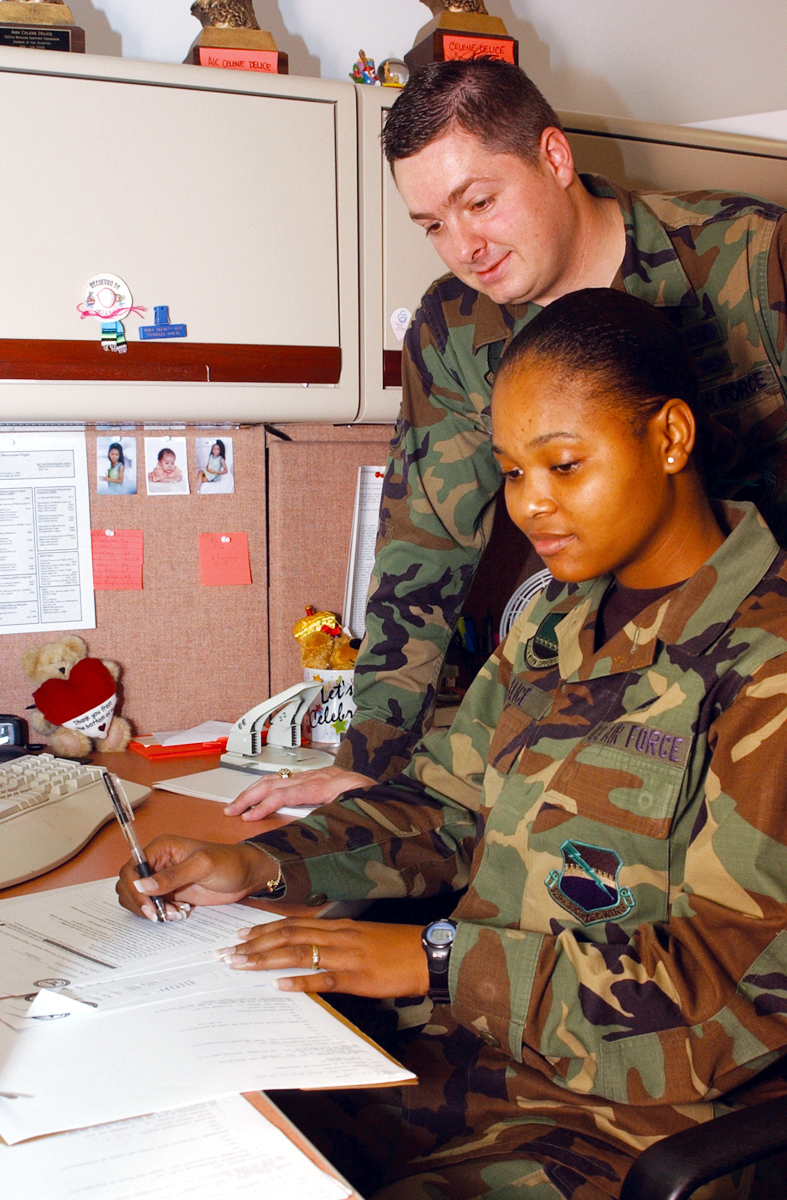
Tyndall Airman becomes U.S. citizen

TYNDALL AIR FORCE BASE, Fla. -- Airman 1st Class Celene Delice and her supervisor, Staff Sgt. Steven Smith, review paperwork at the relocations office here. Airman Delice became a U.S. citizen recently at a ceremony at Naval Air Station Jacksonville, Fla. She is a relocations technician with the 325th Mission Support Squadron, and Sergeant Smith is the noncommissioned officer in charge of outbound assignments.